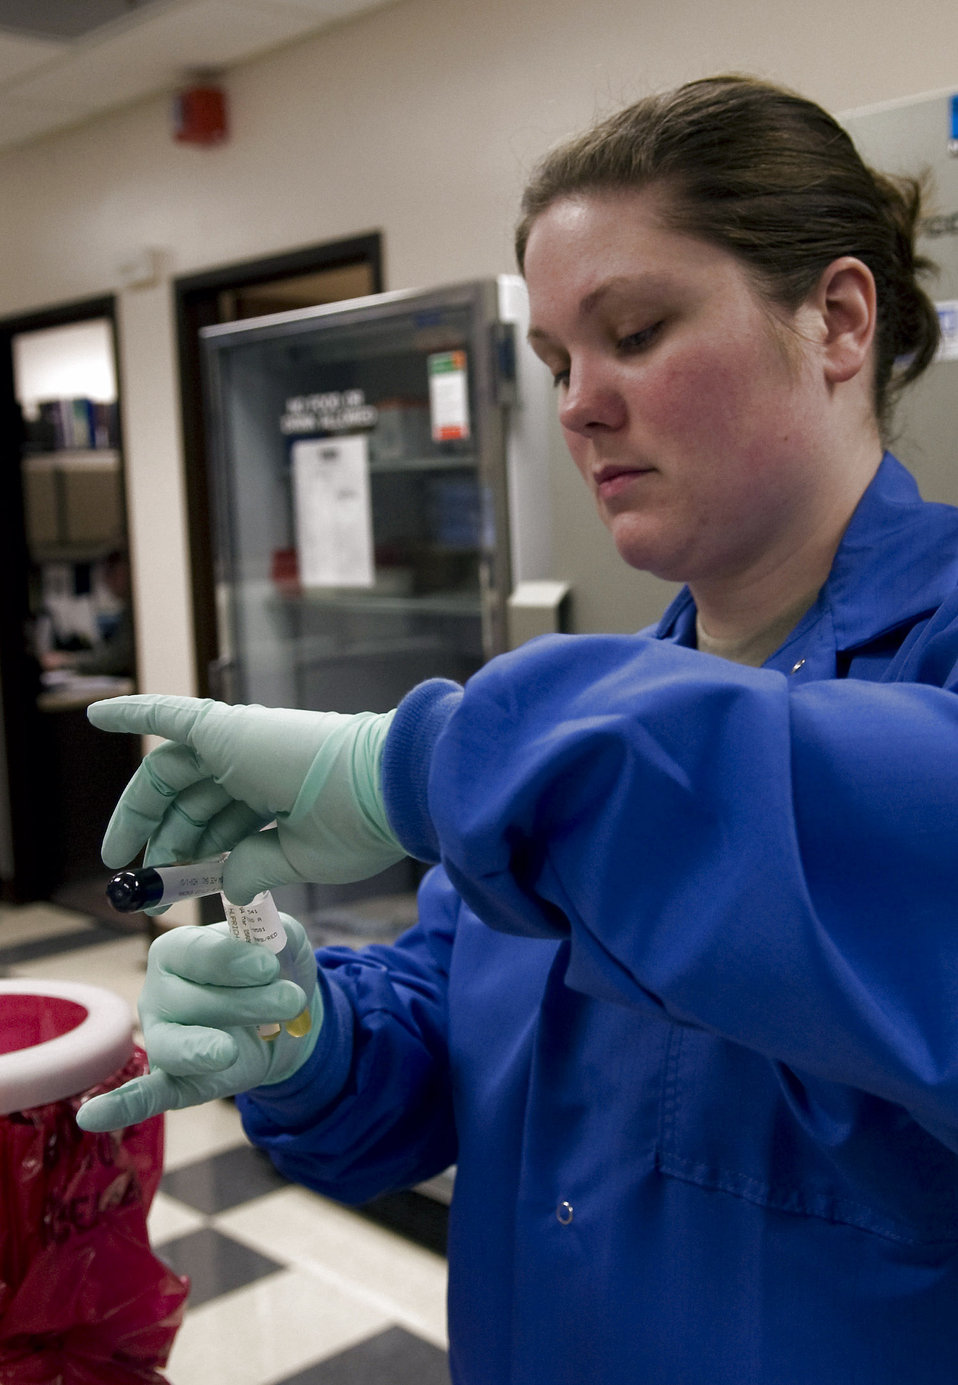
Blood work

Staff Sgt. Toni Thompson prepares blood specimens to be sent to an off-base laboratory for further testing March 4 at Eielson Air Force Base, Alaska. Sergeant Thompson is a 354th Medical Group clinical lab technician.